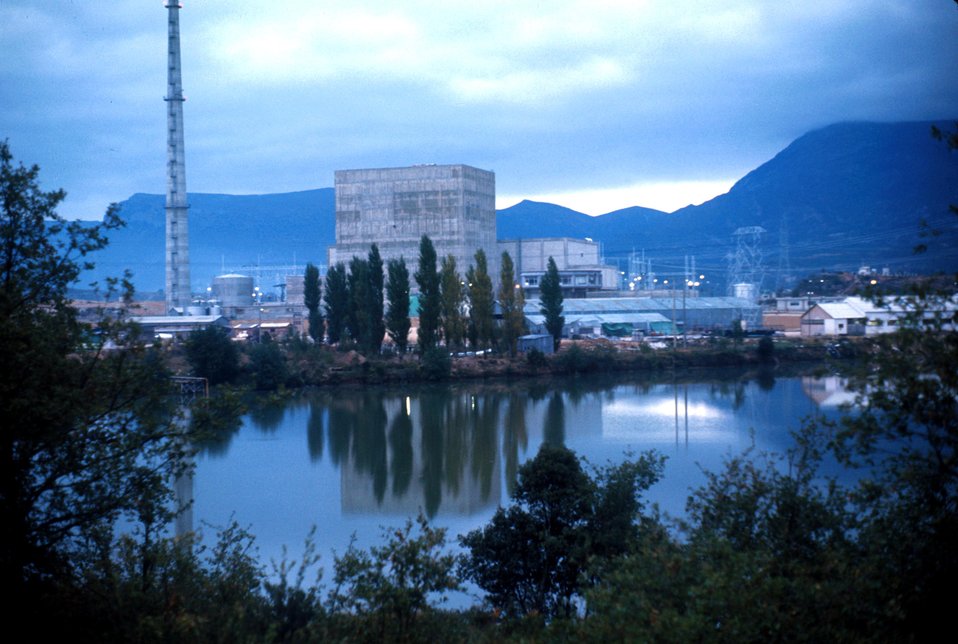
Spain -- Nucleanor Plant (Northern Spain). c. 1970